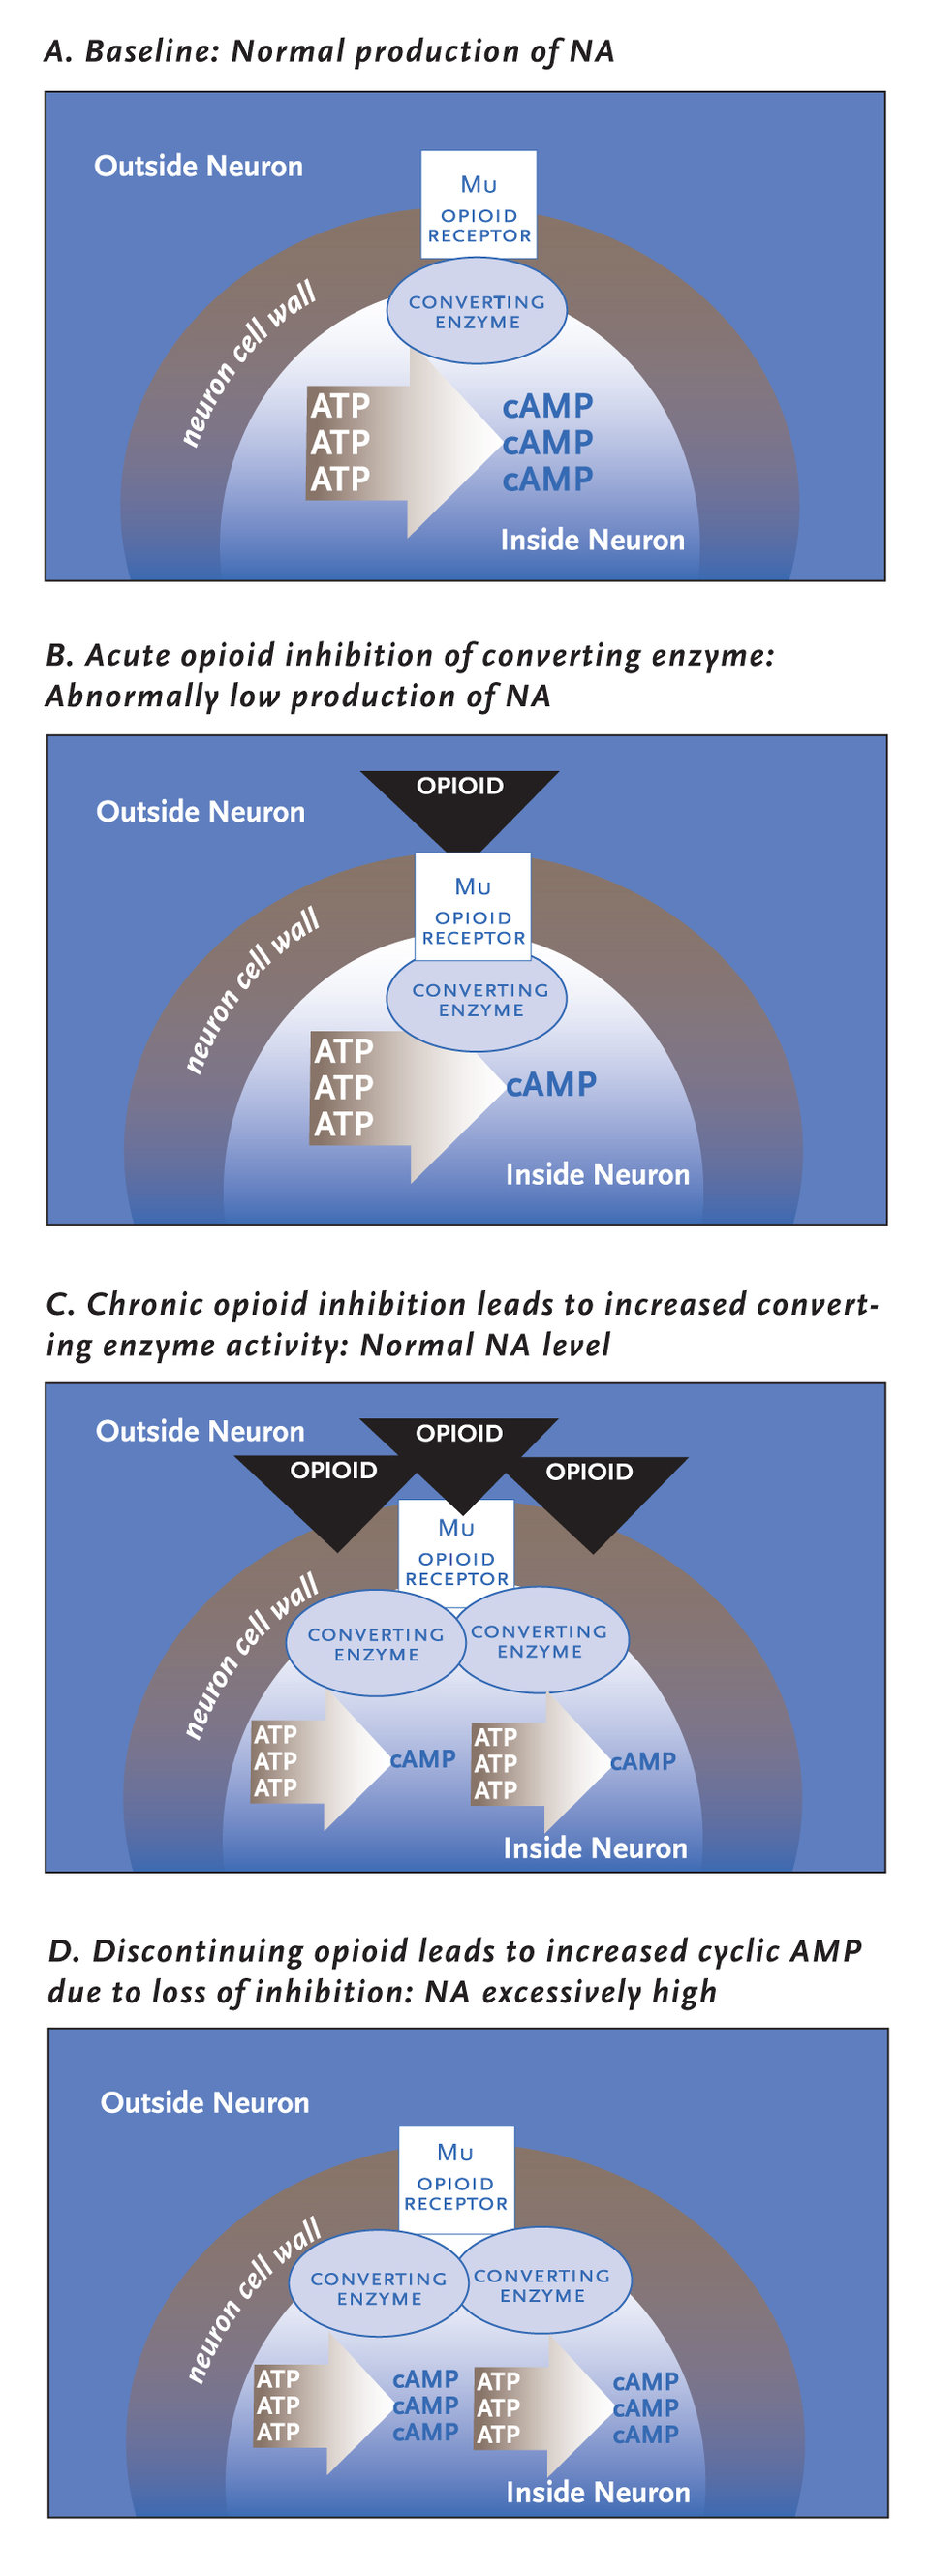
Diagram

The neurobiological basis of dependence and withdrawal